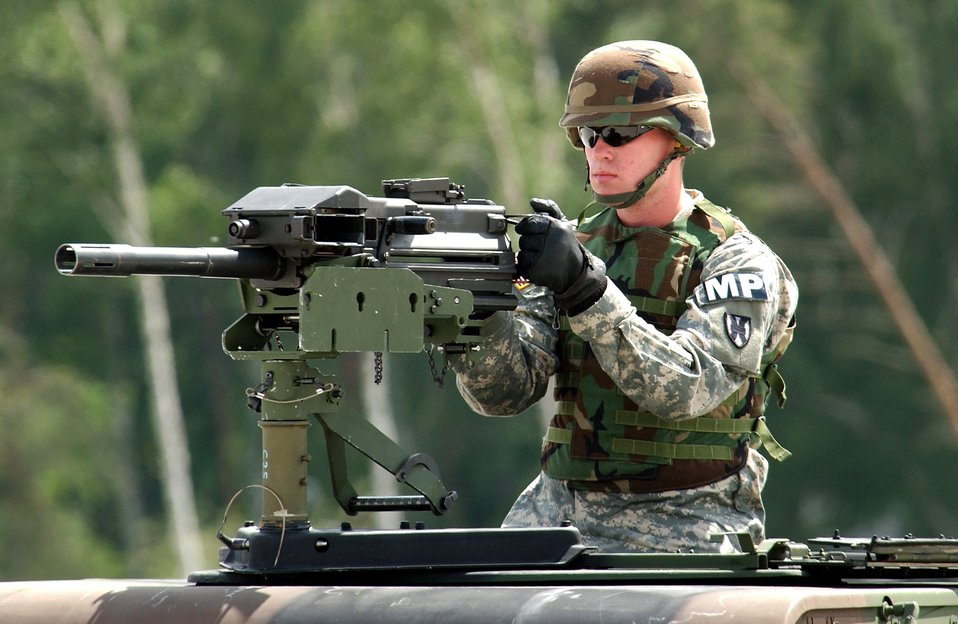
Operation Vigilant Star

A Soldier from the 230th Military Police Company secures the area around a C-17 Globemaster III after a simulated assault landing during Operation Vigilant Star at Ramstein Air Base, Germany, on Wednesday, May 24, 2006. The purpose of this operation was to showcase the capabilities of the C-17 to NATO countries.